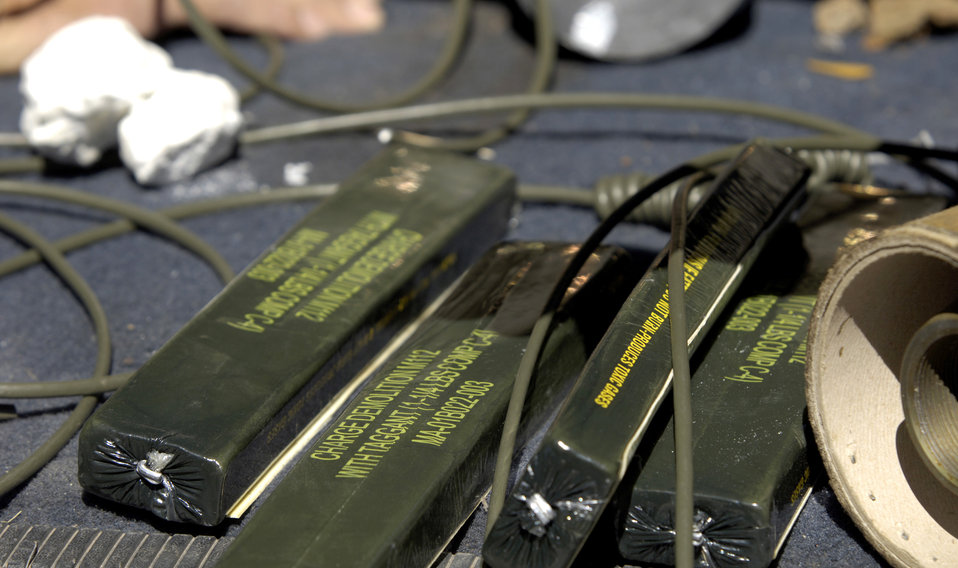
Air Force attends FBI training

POHAKULOA TRAINING AREA, Hawaii (AFPN) -- C-4 demolition sits in the bed of a vehicle before being blown up for a training scenario. The FBI, along with Army cadre, conducted a large vehicle post blast investigator's course here. It included instruction on investigative techniques and evidence collection.